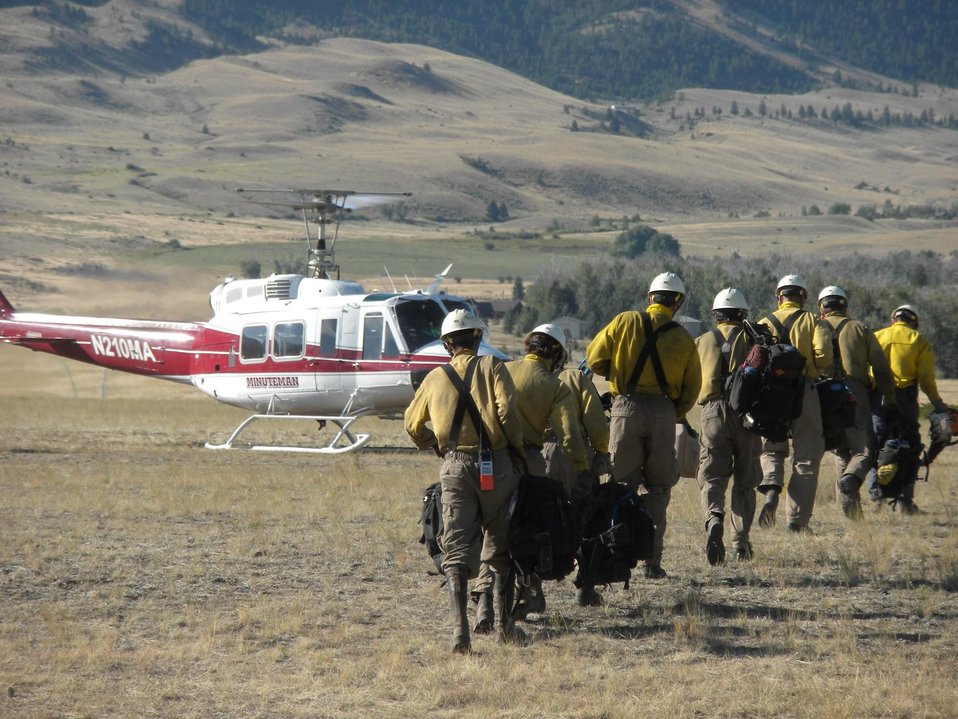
Fire crew prepares to load onto Type 2 helicopter to enter remote area of the Miner Paradise Complex Fire after making a water drop. The Miner Paradise Complex Fire in the Gallatin National Forest consists of three fires near Livingston, Gardiner, and Gallatin, MT began on Aug. 16, 2013 by lightning and has consumed approximately 11,658 acres and is 15% contained.